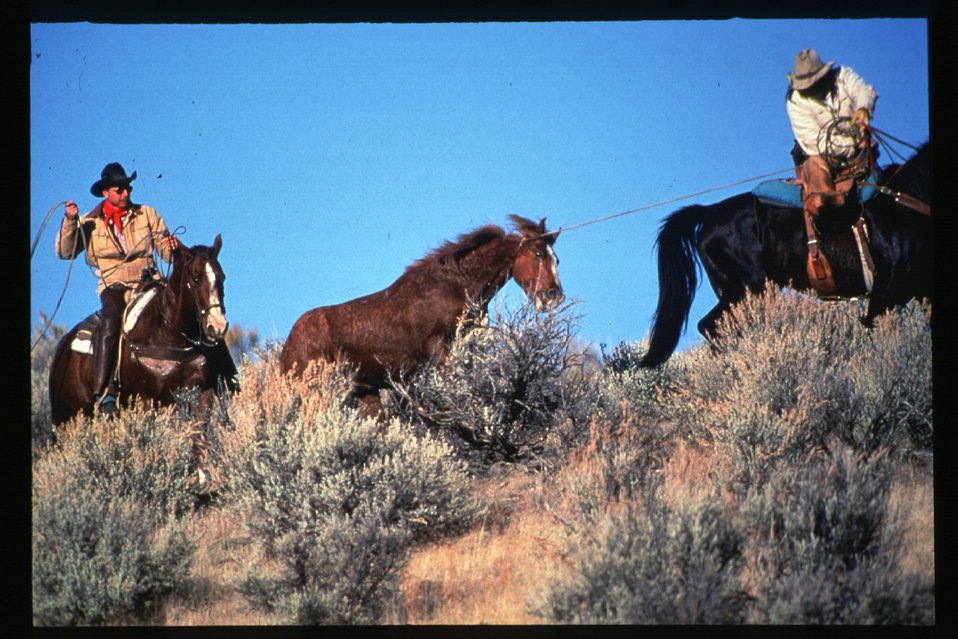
Wild horse and burro Corral roundup WHB LSRD Lower Snake River District